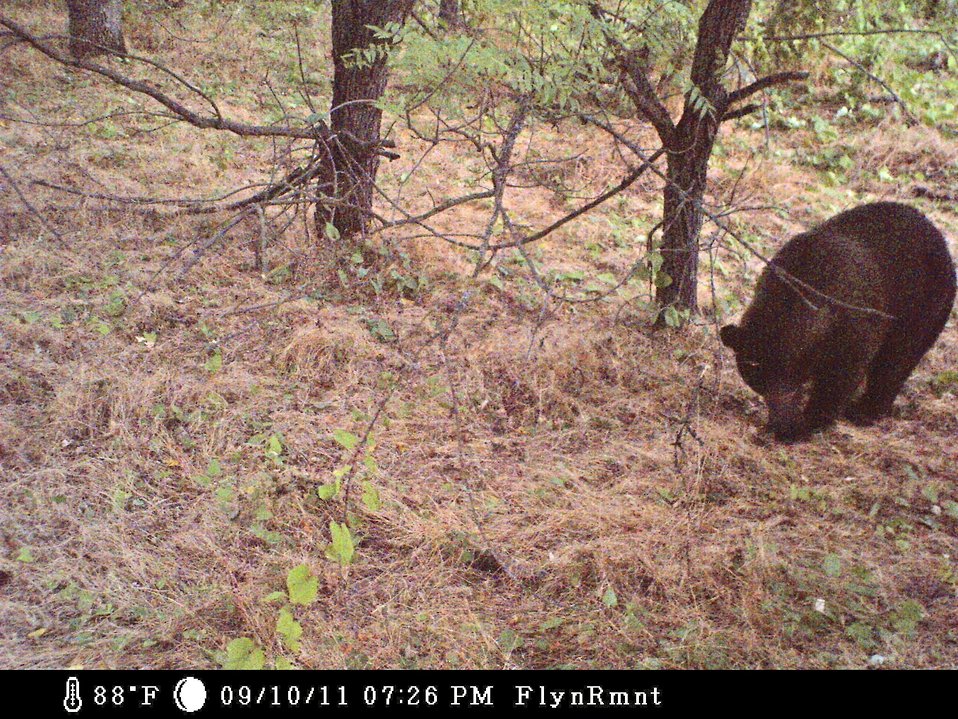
Now where did I drop it?

black bear
trail camera photo
Sacramento River National Wildlife Refuge, CA